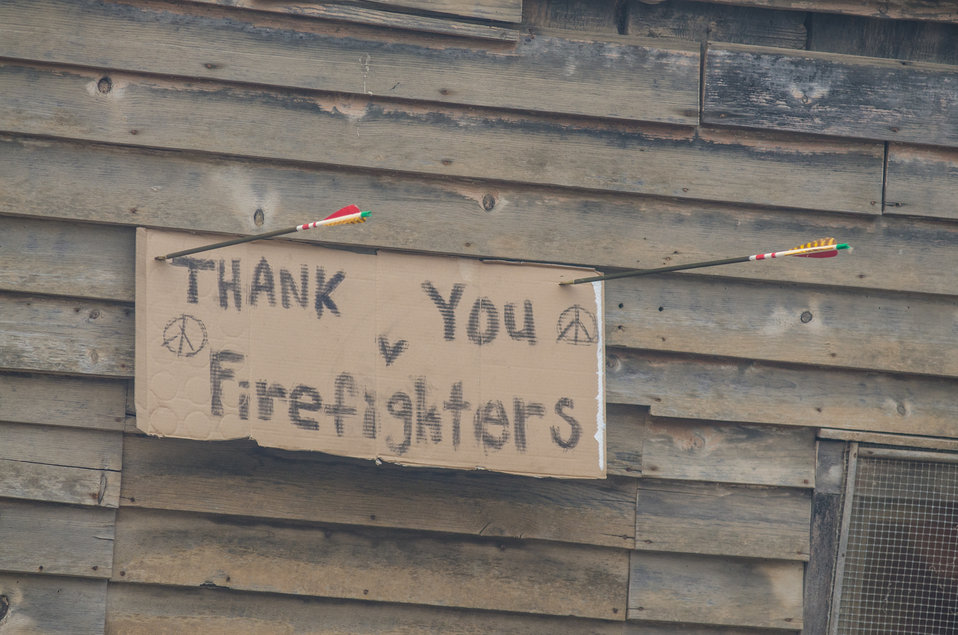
Smoke permeates the air of Sawyers Bar, CA, on Wednesday, Aug. 6, 2013. Salmon River Complex Fire is northwest of Sawyers Bar and west of Etna and Yreka, CA in the Klamath National Forest.